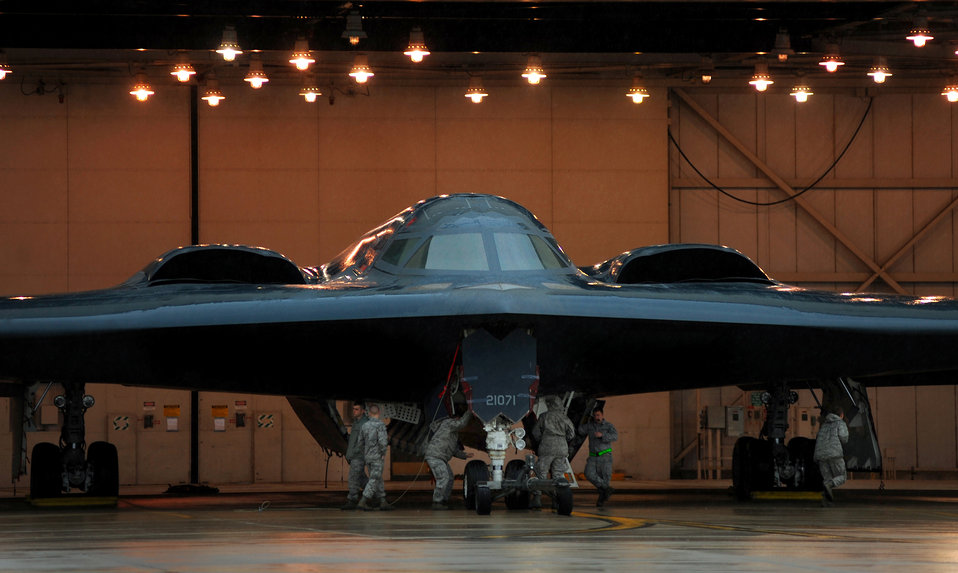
Operation Odyssey Dawn

WHITEMAN AIR FORCE BASE Mo. 509th Aircraft Maintenance Squadron, maintainers and crew chiefs, prepare B-2 Stealth Bombers for Operation Odyssey Dawn March 19, 2011.